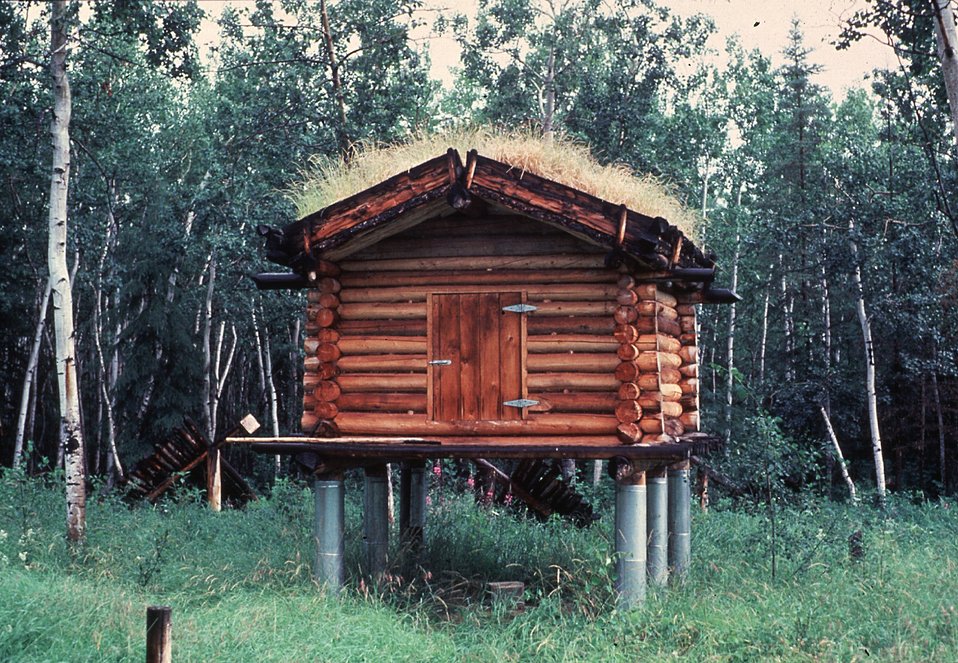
Cache in Yukon Flats NWR